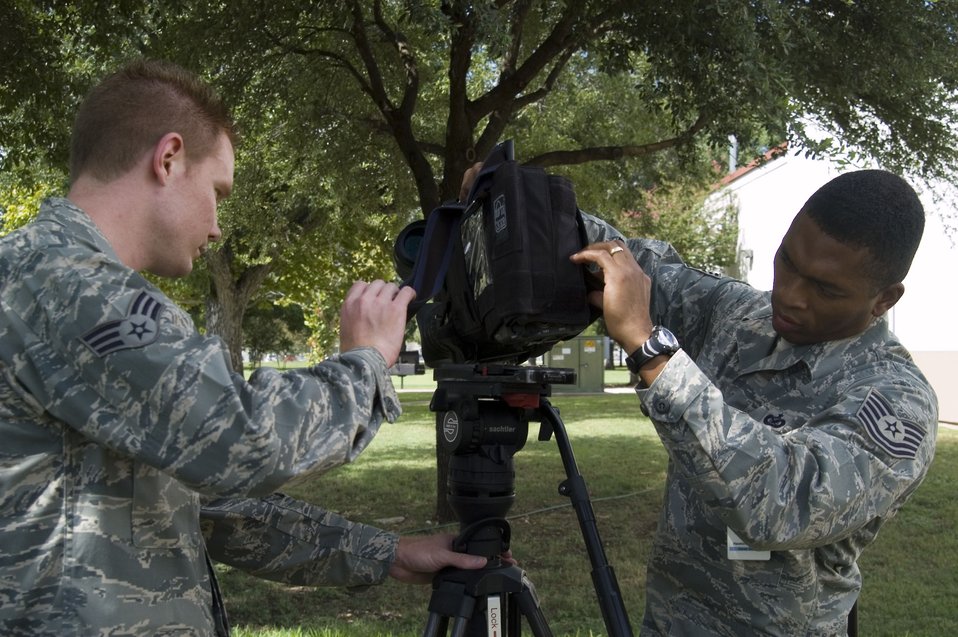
Hometown News Holiday Greets prepare for trip

Senior Airmen Grant Hagman and Tech. Sgt. Dwight Hawkins prepare video gear Aug. 18 for the Hometown News Holiday Greets trip. The team of nine will leave Air Force News Agency in San Antonio in late August to begin their mission that allows nearly 15,000 families to see their deployed loved ones. The teams will visit more than 75 military installations in 20 countries.